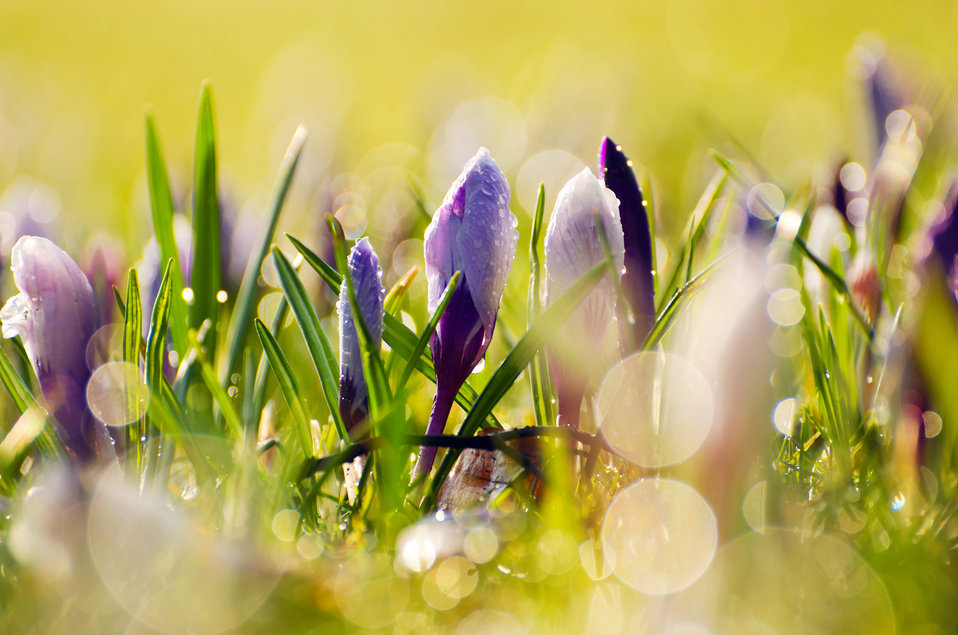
Flowers

Spring flowers.